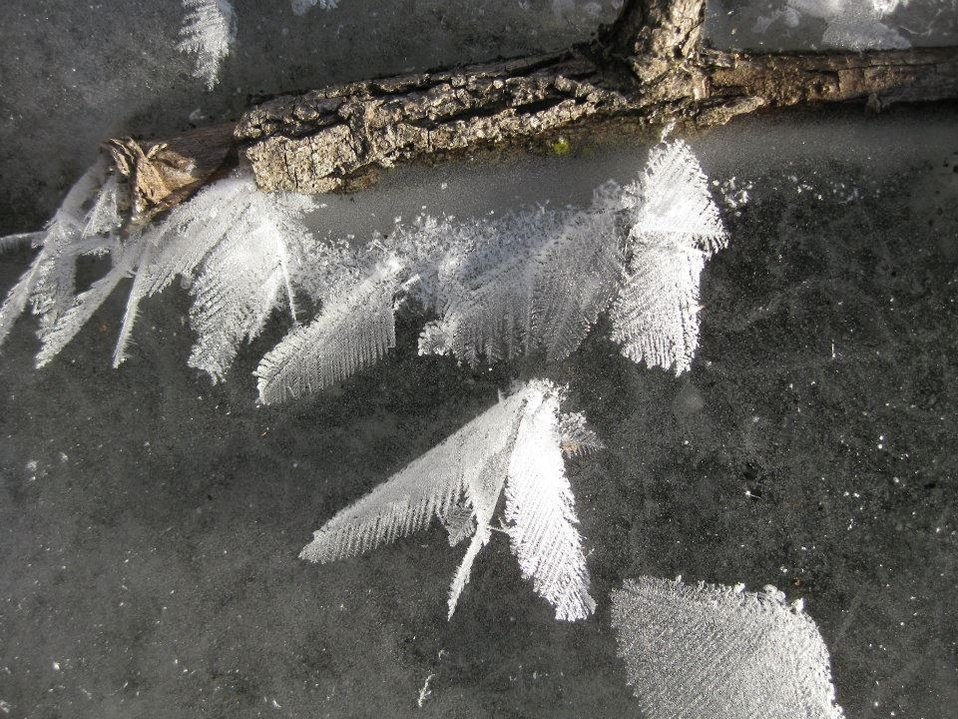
hoarfroast in the marsh

Prairie Wetlands Learning Center, MN
January 13, 2012